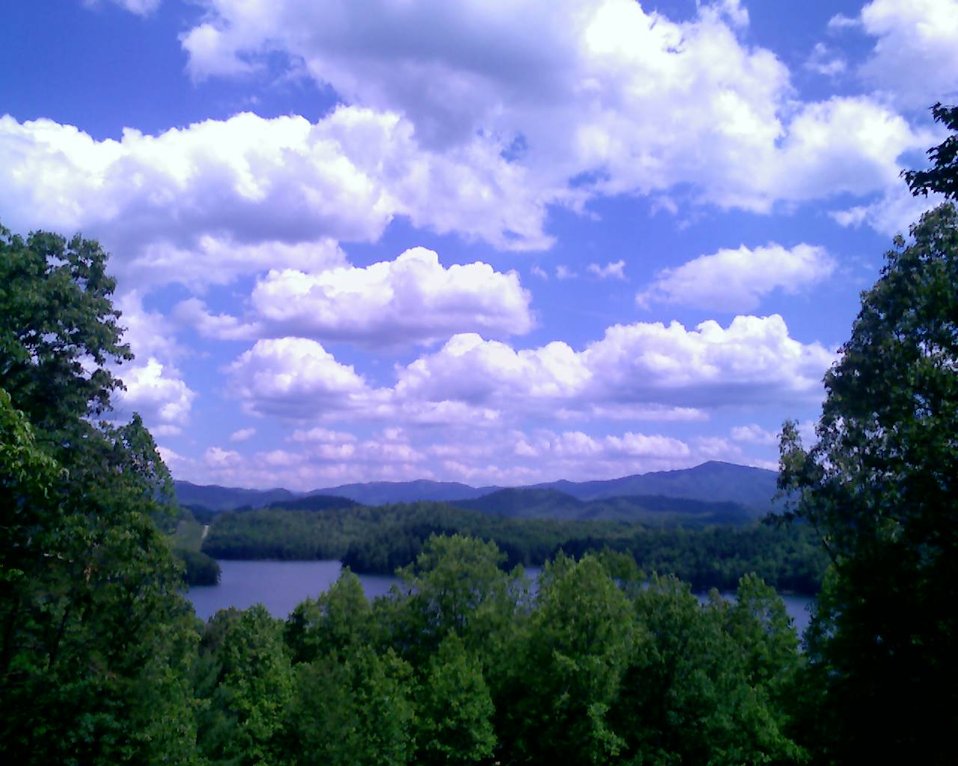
Uploaded by request of Phil Heslep

Photo taken at the border between Tennessee and North Carolina.

The photo was taken on a motorcycle trip last summer it was a glorious day. Photo was taken using a 1mpx camera phone.